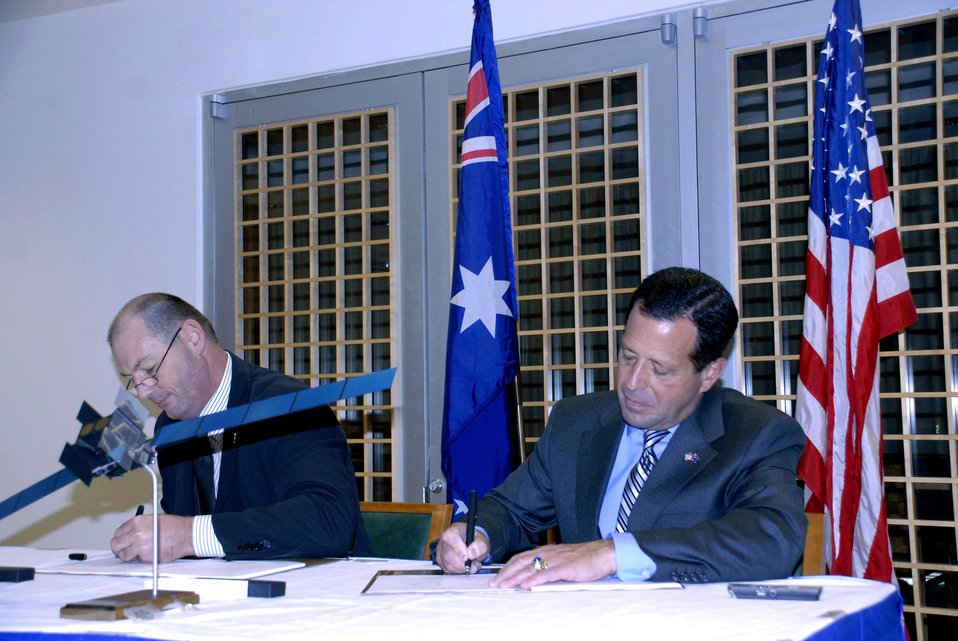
U.S. partners with Australia on new communications satellites

Bruce Lemkin (right), deputy undersecretary of the Air Force for international affairs, and Mark Reynolds, Royal Australian Air Force Counsellor Defence Material, sign a memorandum of agreement at the Australian Embassy in Washington D.C. Nov. 14 that will provide both nations assured access to the new wideband global satellite system. The new six-satellite system is the next generation in communications satellites and is better able to handle bandwidth-intensive applications such as video streaming, teleconferencing, real-time data transmission, and high-resolution imaging.